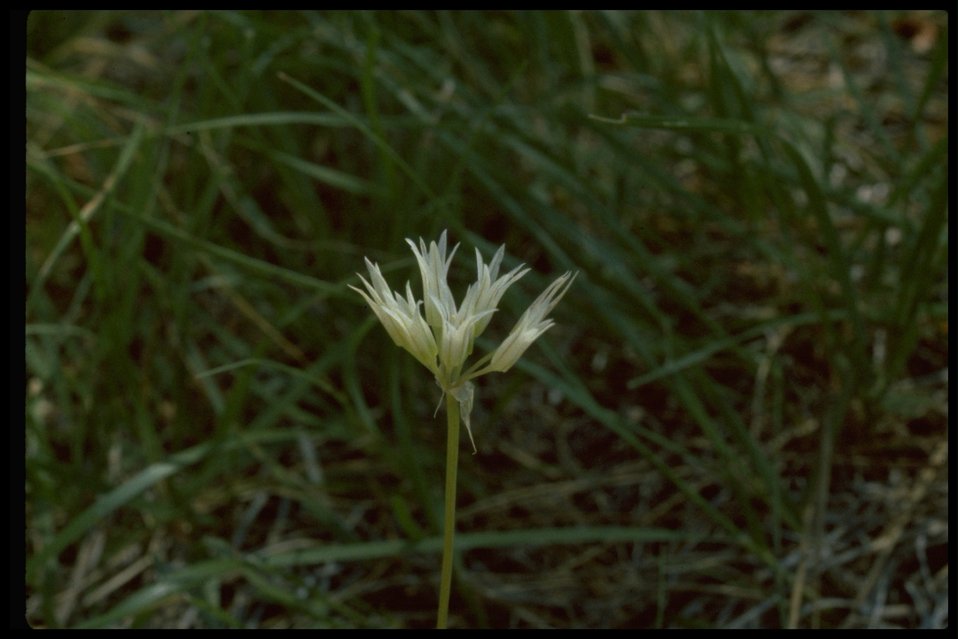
Allium bolanderi var. mirabile, commonly known as Bolander's Onion.